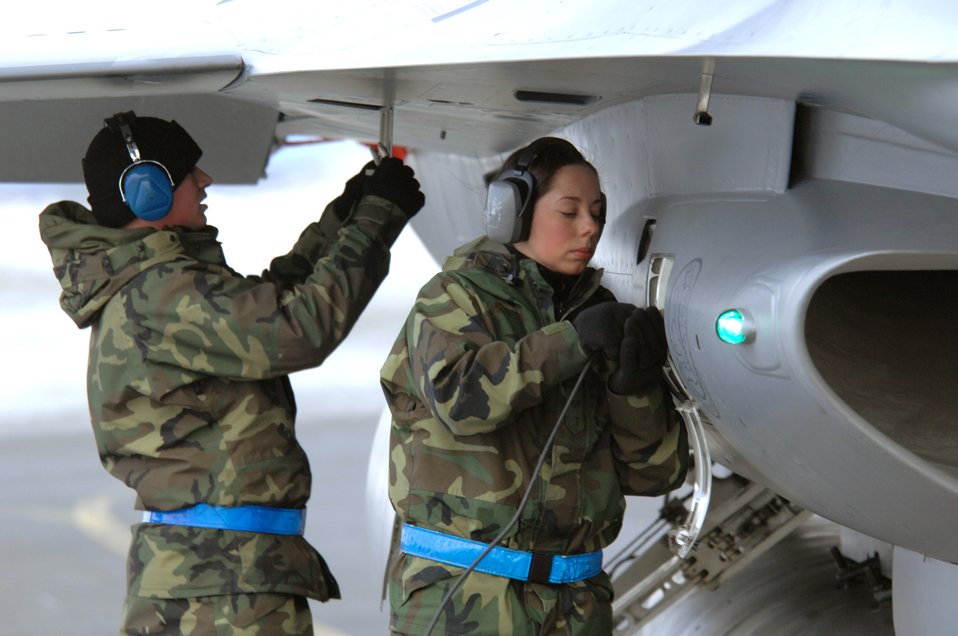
A chilling task

Airman First Class Justin Hendrick and Senior Airman Amanda Debkowski prep an F-16 Fighting Falcon Feb. 8 at Eielson Air Force Base, Alaska. The crew is responsible for arming all weapons and making sure aircraft are ready for flight. The 18th Fighter Squadron here conducts air operations for combat-ready F-16 aircraft and provides close-air support, forward air control, battlefield air interdiction, and offensive counter air. The Airmen are assigned to the 354th Maintenance Squadron.